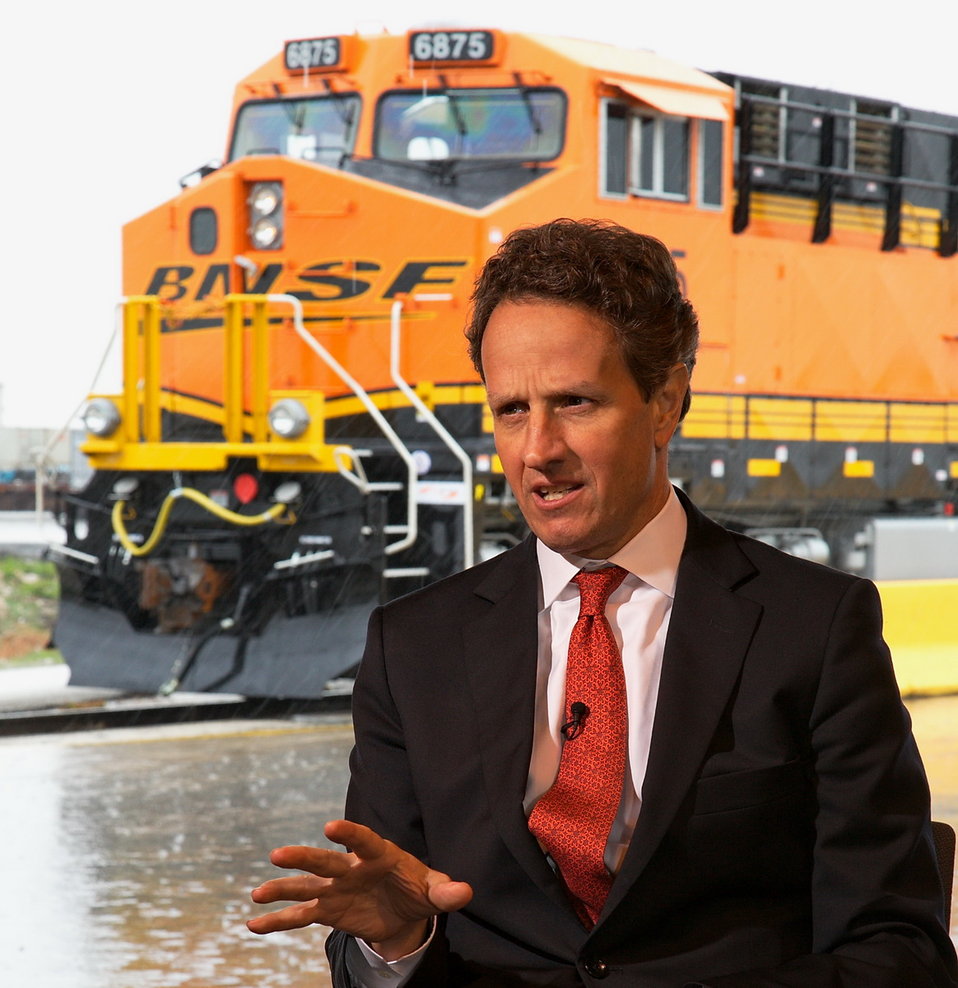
Secretary Geithner Visits BNSF Railway Dallas-Fort Worth, TX

After his tour of BNSF’s Alliance Intermodal Facility in North Fort Worth, Treasury Secretary Tim Geithner sat down with PBS's Nightly Business Report's Darren Gersh for a wide-ranging interview, including a discussion about on the state of the economy and the President’s efforts to create jobs and a stronger American economy that is built to last. While in the Dallas-Fort Worth area, the Secretary also met with local business leaders at the Dallas Regional Chamber of Commerce.